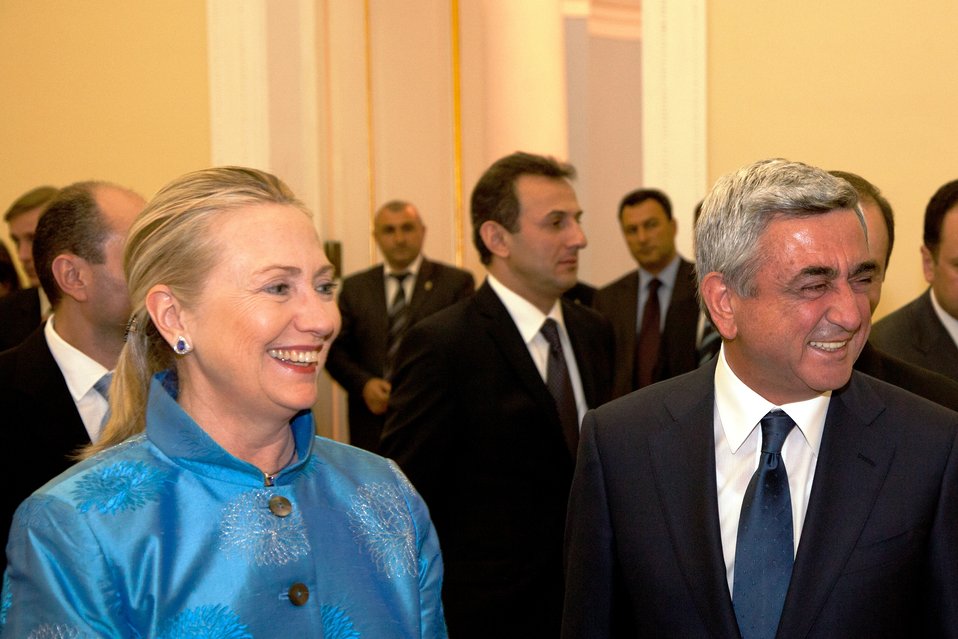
Secretary Clinton Meets With Armenian President Sargsian

U.S. Secretary of State Hillary Rodham Clinton meets with Armenian President Serzh Sargsian in Yerevan, Armenia, on June 4, 2012.